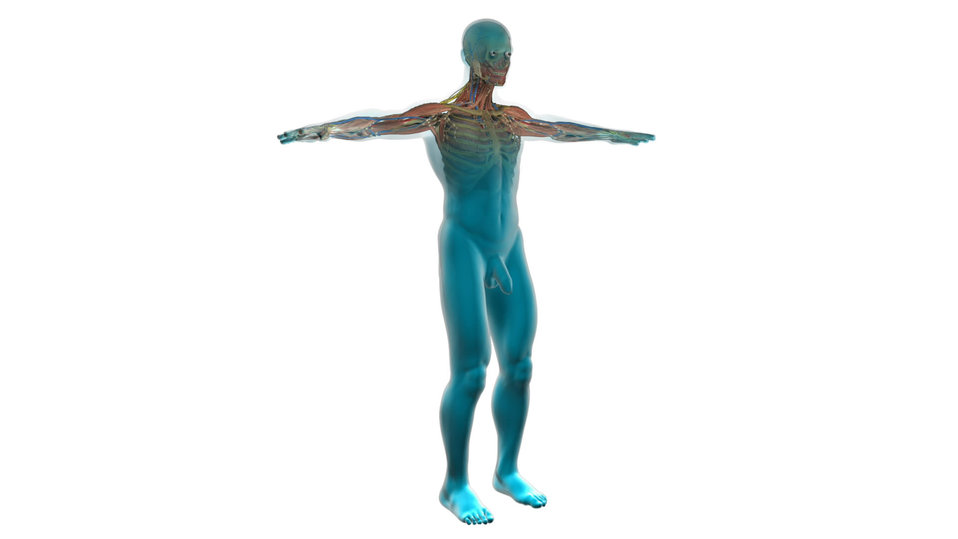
Human anatomy

X-ray of human anatomy.